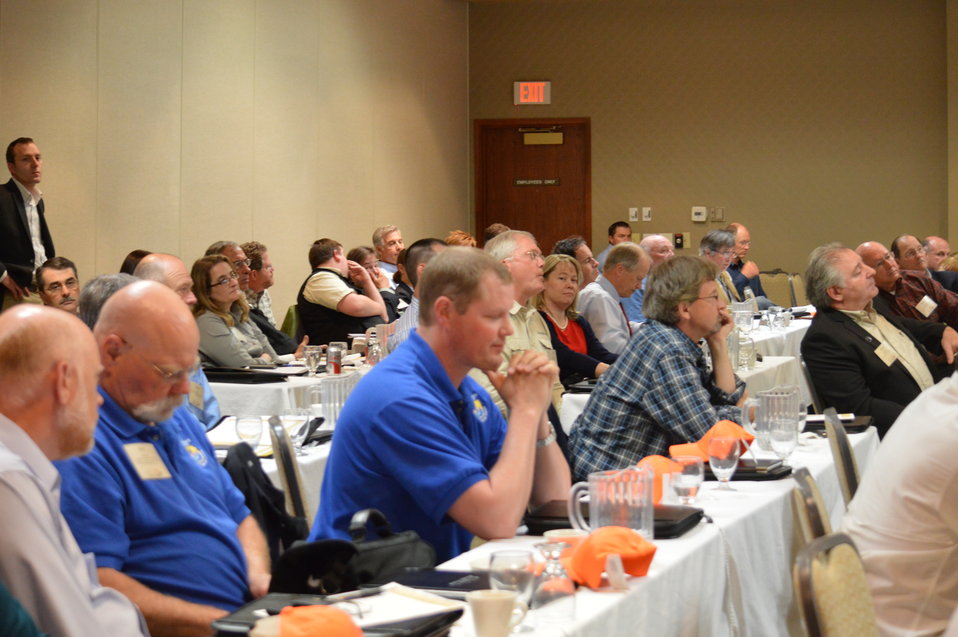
Audience at the Prairie Summit

Through the efforts of Ducks Unlimited and its partners, a Prairie Summit meeting was held in June 2013 in Bismarck, North Dakota, bringing key stakeholders to the table to identify and begin to address the immediate needs of the overall effort to conserve wetlands and grasslands, as well as bring media attention to the issues at hand and the urgency of the situation.